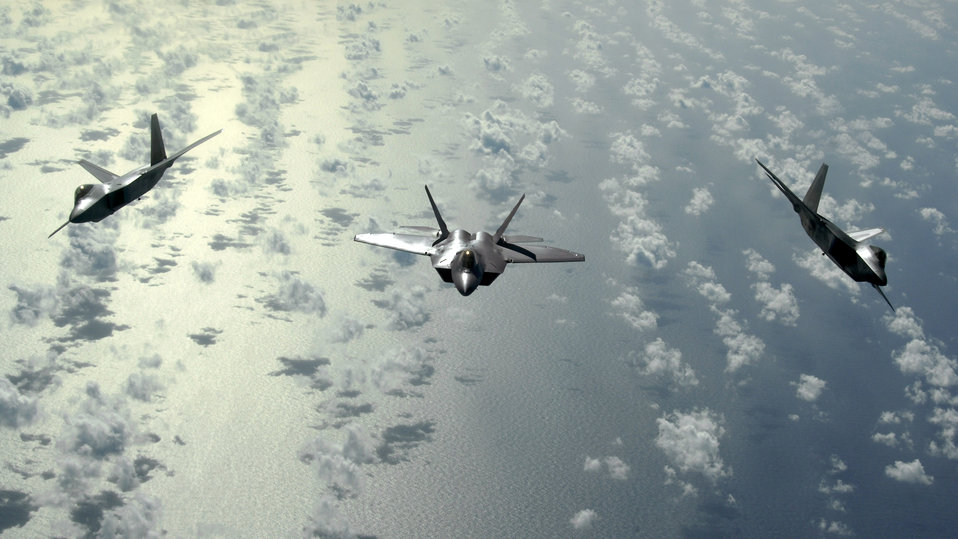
Secure in the Pacific

A three-ship formation of F-22 Raptors flies over the Pacific Ocean Jan. 28 as part of a deployment to Andersen Air Force Base, Guam. The Raptors are deployed from Elmendorf AFB, Alaska.